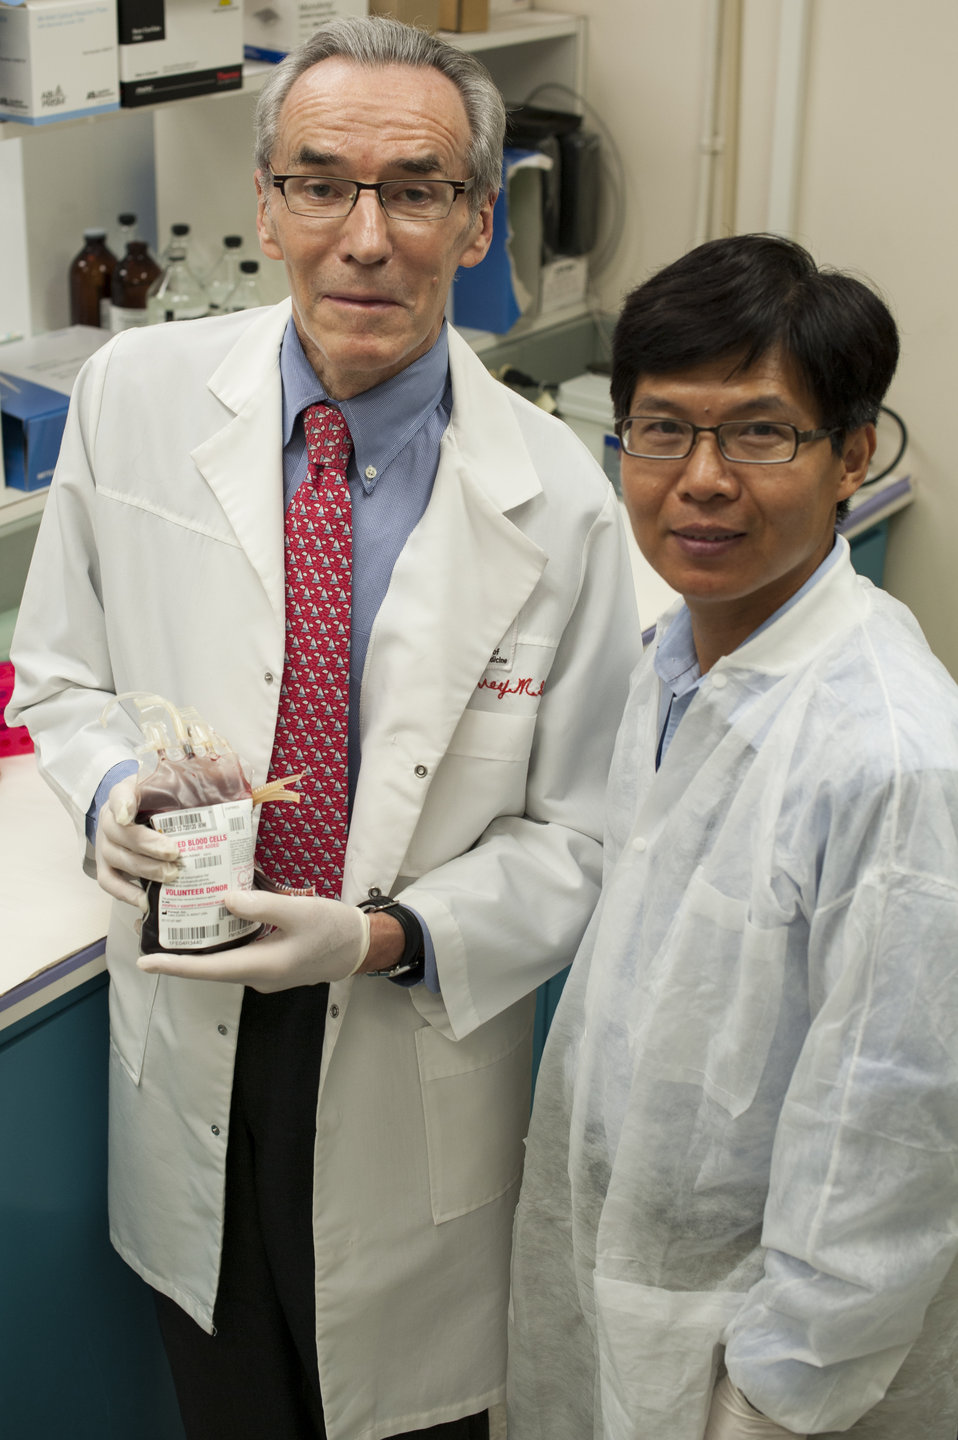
Blood Research: Saving Lives (8290)

Richard Davey, M.D., and Jason Liu, Ph.D., hold a unit of blood that is ready for further processing.
Dr. Davey is director of the Division of Blood Applications and Dr. Liu is the director of the Laboratory of Molecular Testing and Immunogenetics at the Food and Drug Administration’s Office of Blood Research and Review. FDA is responsible for the safety of our nation’s blood supply and is at the forefront of evaluating and encouraging innovative technologies for protecting it.

Read this Consumer Update to learn more: Advances in Saving Lives with Blood